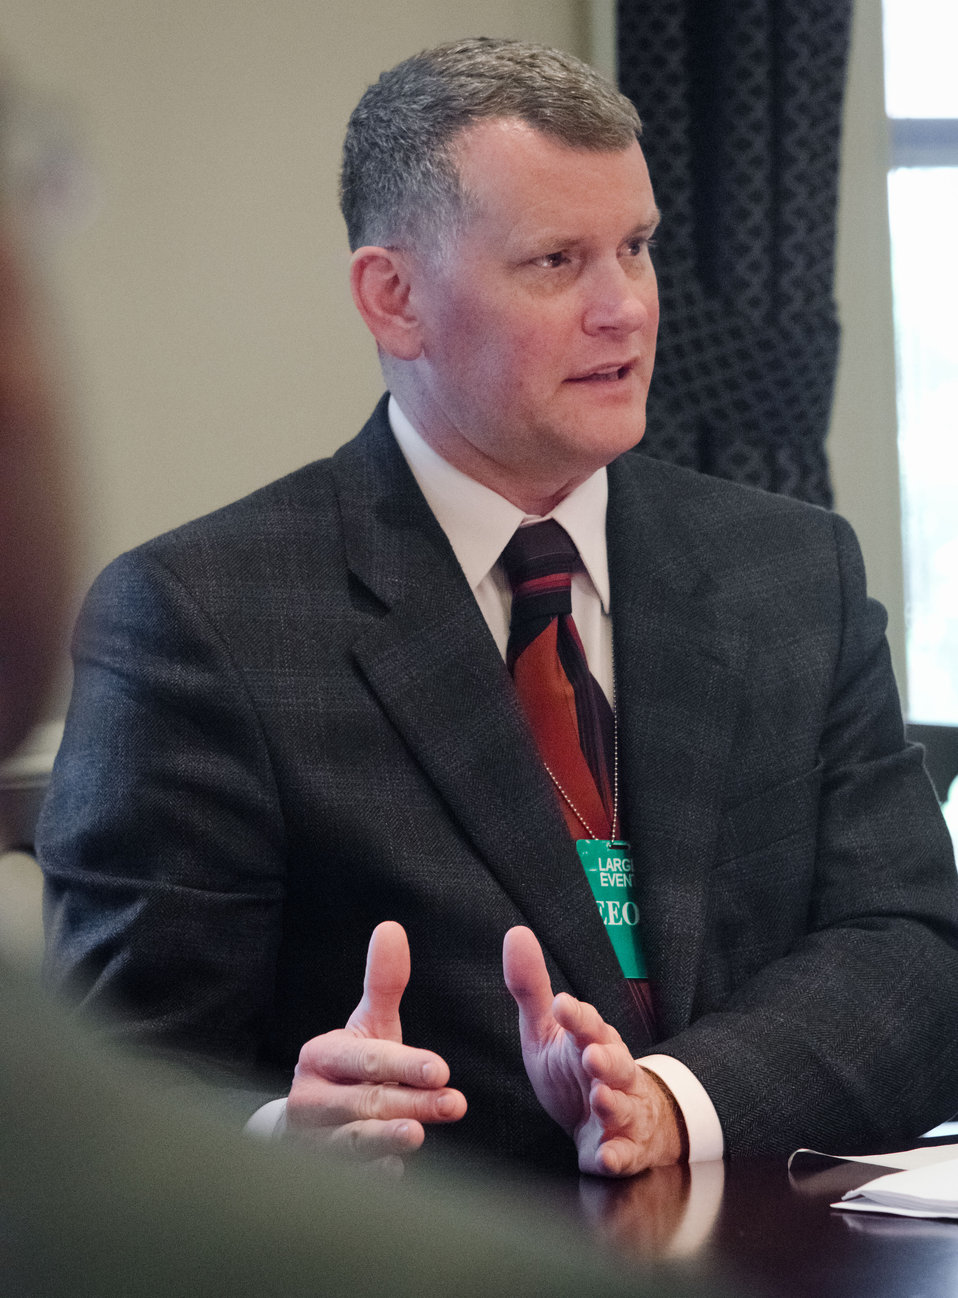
Denali Comission Representative Rodger Marcil, Lt. Col., US Army (Ret.) speaks during the White House Rural Council chaired by Agriculture Secretary Tom Vilsack at the White House in Washington, D.C. on Friday, Oct. 5, 2012. The White House Rural Council discusses recent White House announcements and Secretary Vilsack asked council members to outline their work plan for the coming months.